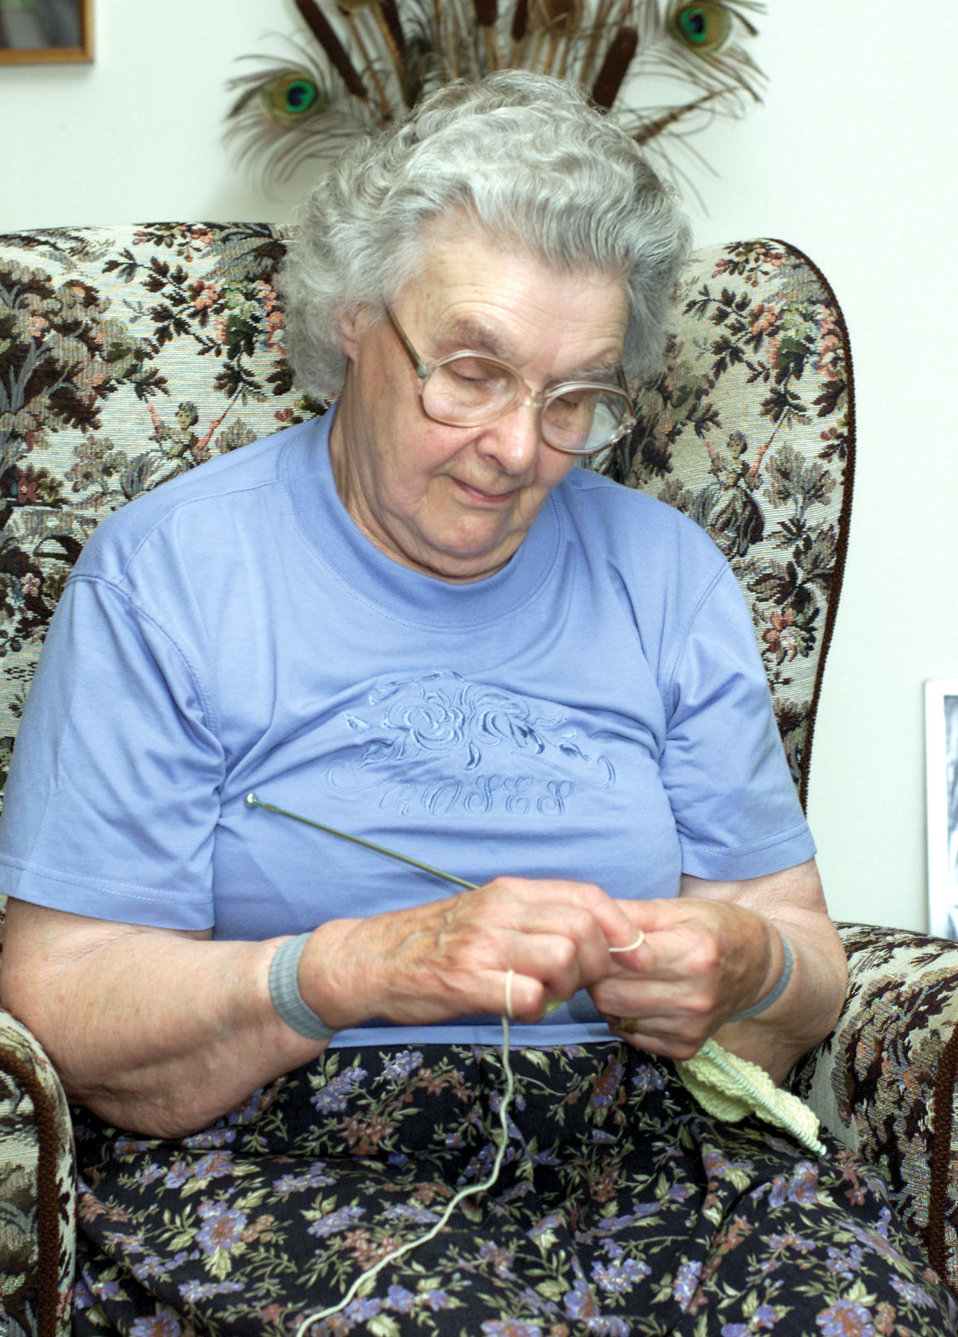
American infants receive special gifts from 'hidden grandma'

BENWICK, England -- Queenie Vince knits a baby sweater at her home here. Throughout the past six years, Mrs. Vince has donated about 280 hand-knitted sets of baby clothes to the family support center layette program at Royal Air Force Alconbury, England.